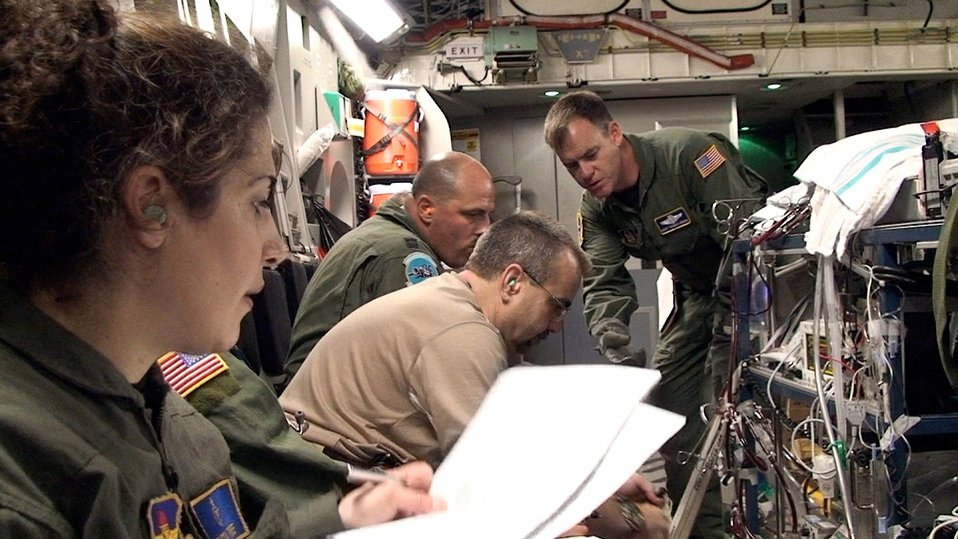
WHMC ECMO team

The Wilford Hall Medical Center's extra corporeal membrane oxygenation team cares for the critically ill infant team cares onboard the C-17 Globemaster III en route to San Diego, July 22, where the infant will receive advance medical care to replace a shunt in her heart. Left to right, Maj. (Dr.) Melissa Tyree, 59th Maternal/Child Care Squadron, George Brandon, pediatric intensive care unit nurse, Capt. Terry Bailey, 59th Medical Inpatient Squadron and Master Sgt. Thomas Kamin, 349th Aeromedical Evacuation Squadron.